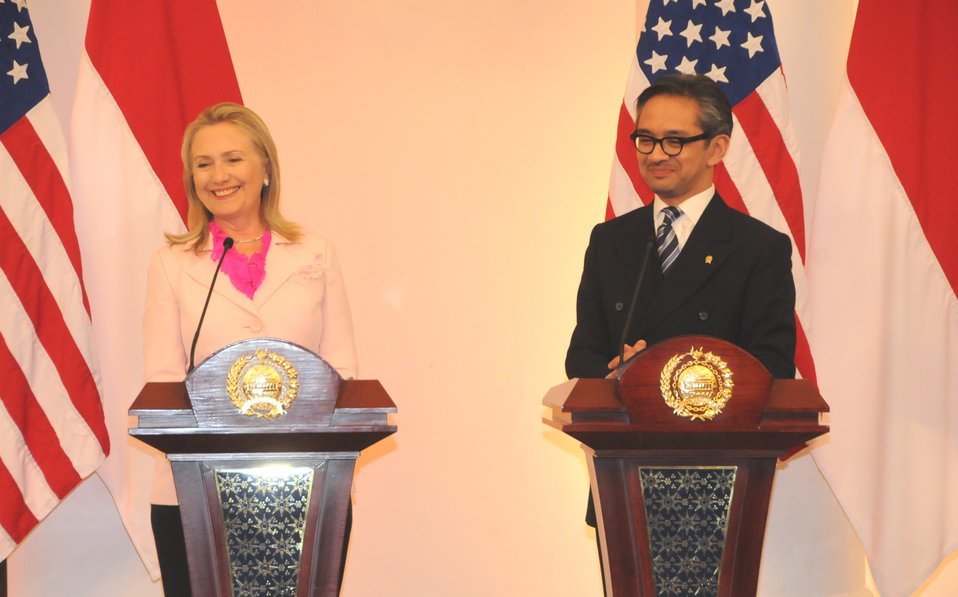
Secretary Clinton With Foreign Minister Natalegawa in Indonesia

U.S. Secretary of State Hillary Rodham Clinton delivers remarks with Indonesian Foreign Minister Raden Mohammad Marty Muliana Natalegawa during a press conference after their meeting in Jakarta, Indonesia, September 3, 2012.